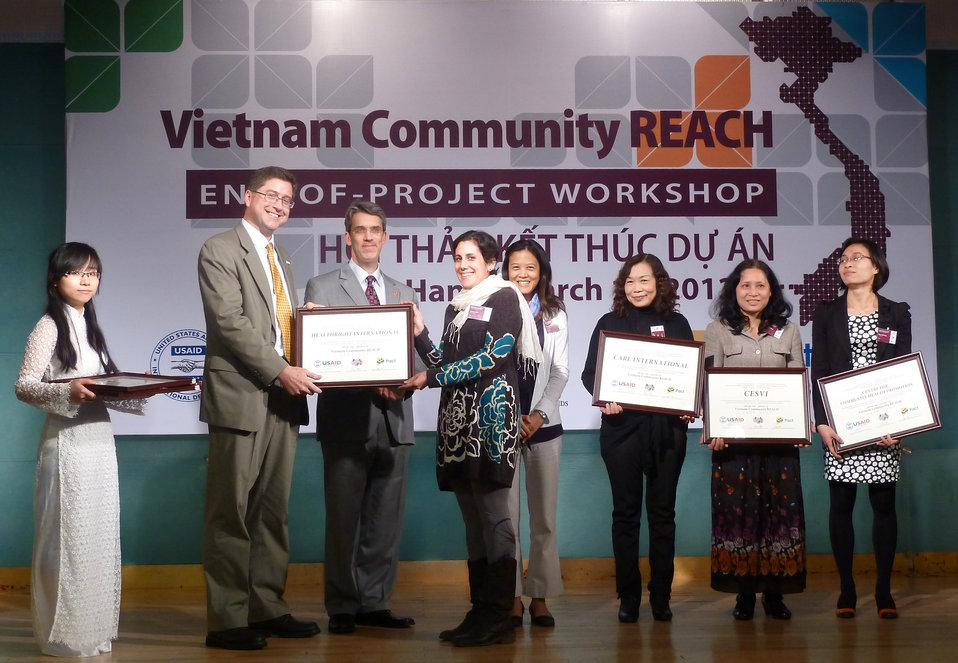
USAID, PEPFAR, and Pact award certificates to local and international partners for their work in addressing HIV in Vietnam

Community REACH project close-out with USAID and implementing partner, Pact